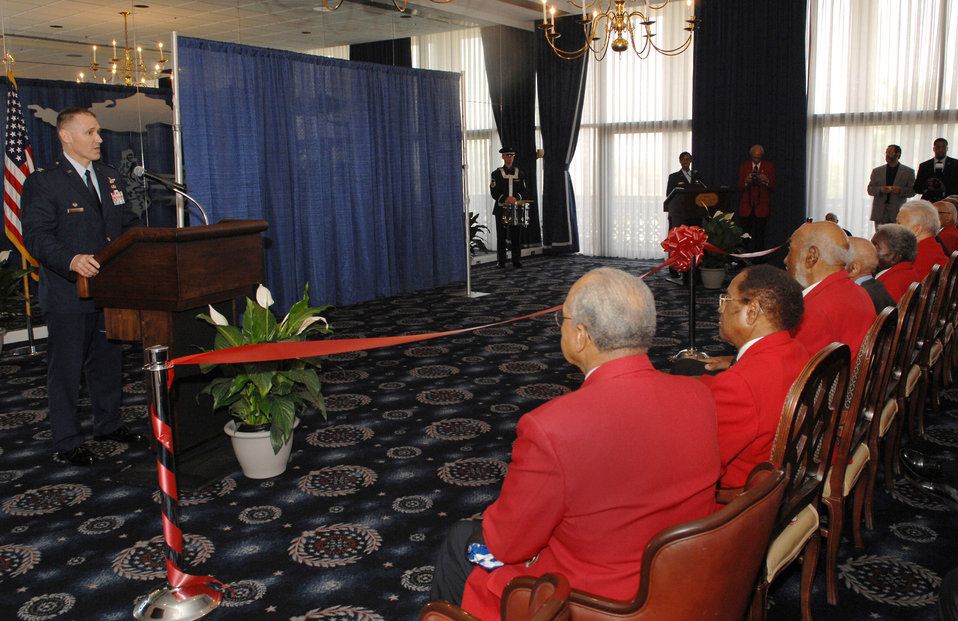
Col. Kurt Neubauer speaks to original members of the Tuskegee Airmen at the dedication ceremony March 28 of the